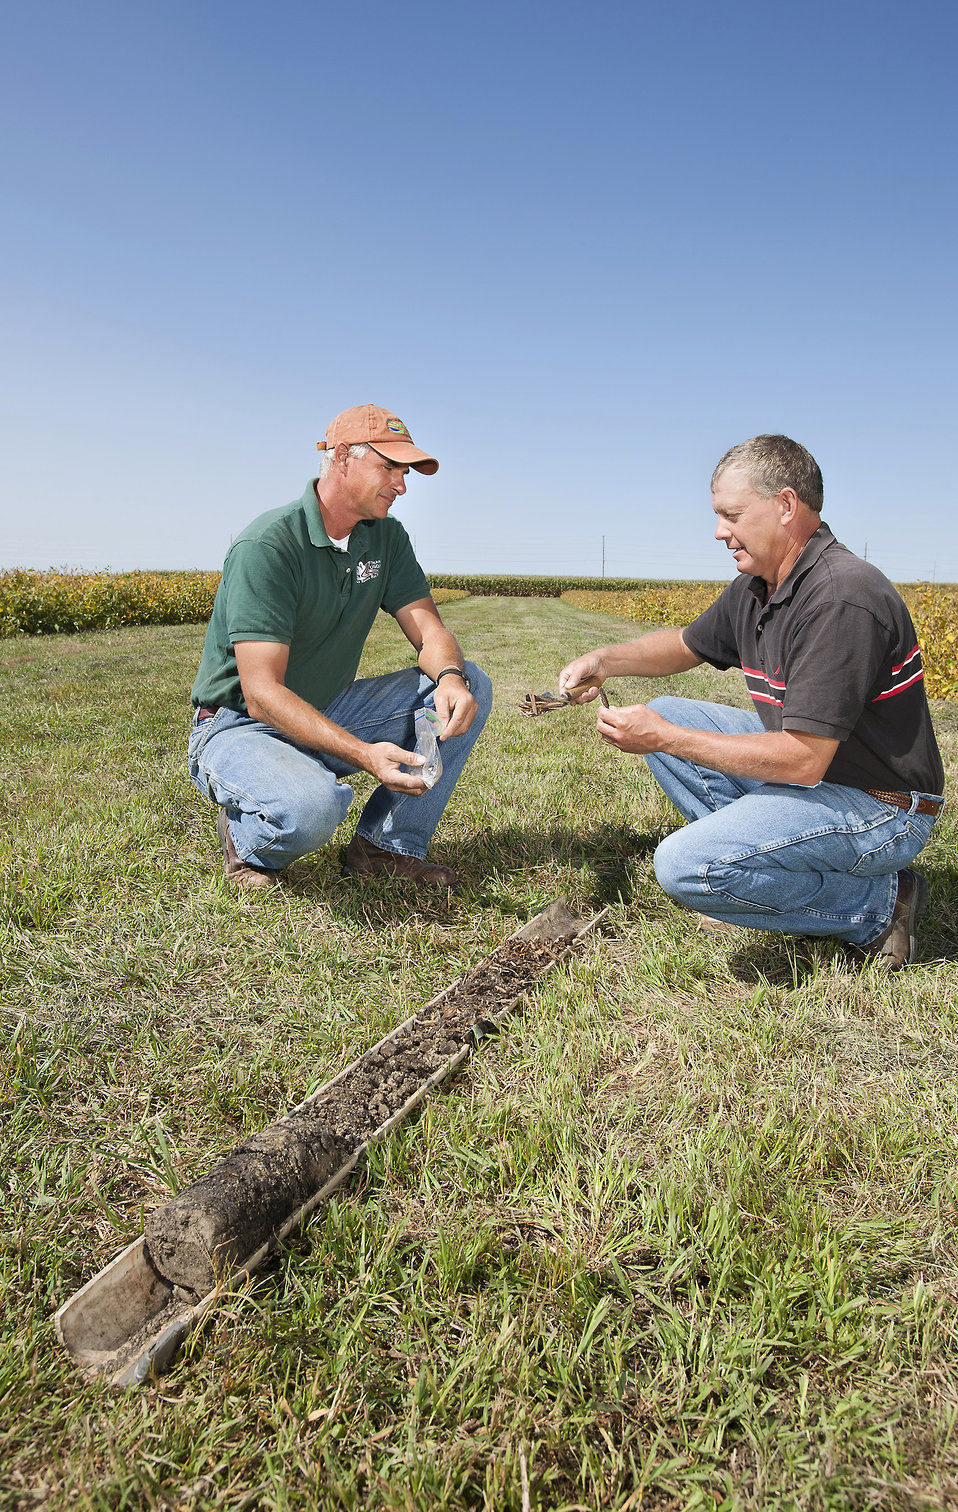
U.S. Department of Agriculture (USDA) Agriculture Research Service (ARS) technicians Kent Heikens and Ben Knutson examine a core sample from the bio-reactor on Jan. 24, 2003. The topsoil covering the wood chips is seen in the foreground.